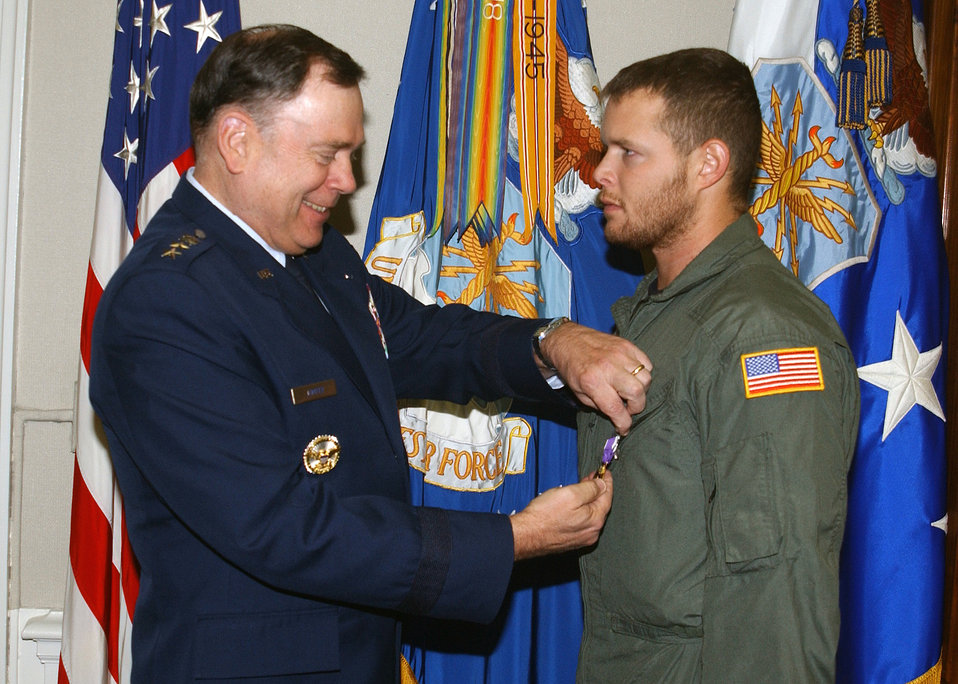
Honors

WASHINGTON (AFPN) -- Staff Sgt. Robert L. Disney Jr. receives a Purple heart from Air Force Chief of Staff Gen. John P. Jumper during a Pentagon ceremony April 30. Disney was hit by enemy fire April 18 during a mission in support of Operation Enduring Freedom.